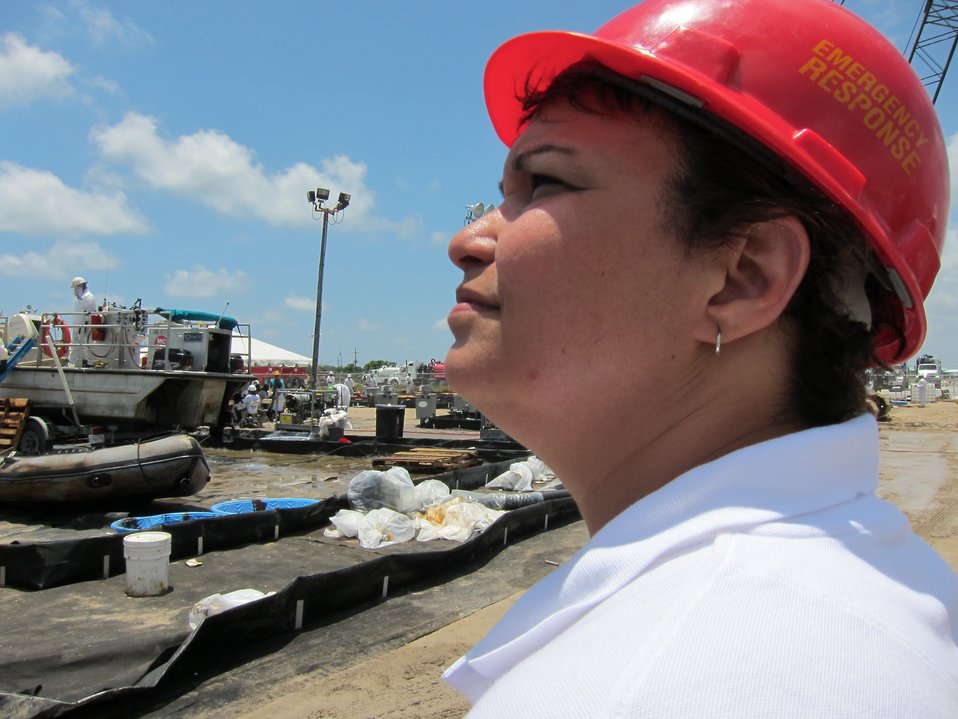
EPA Administrator Jackson on Grand Isle

June 11, 2010 - EPA Administrator Lisa P. Jackson observing vessel and boom clean up operations on Grand Isle, Louisiana.